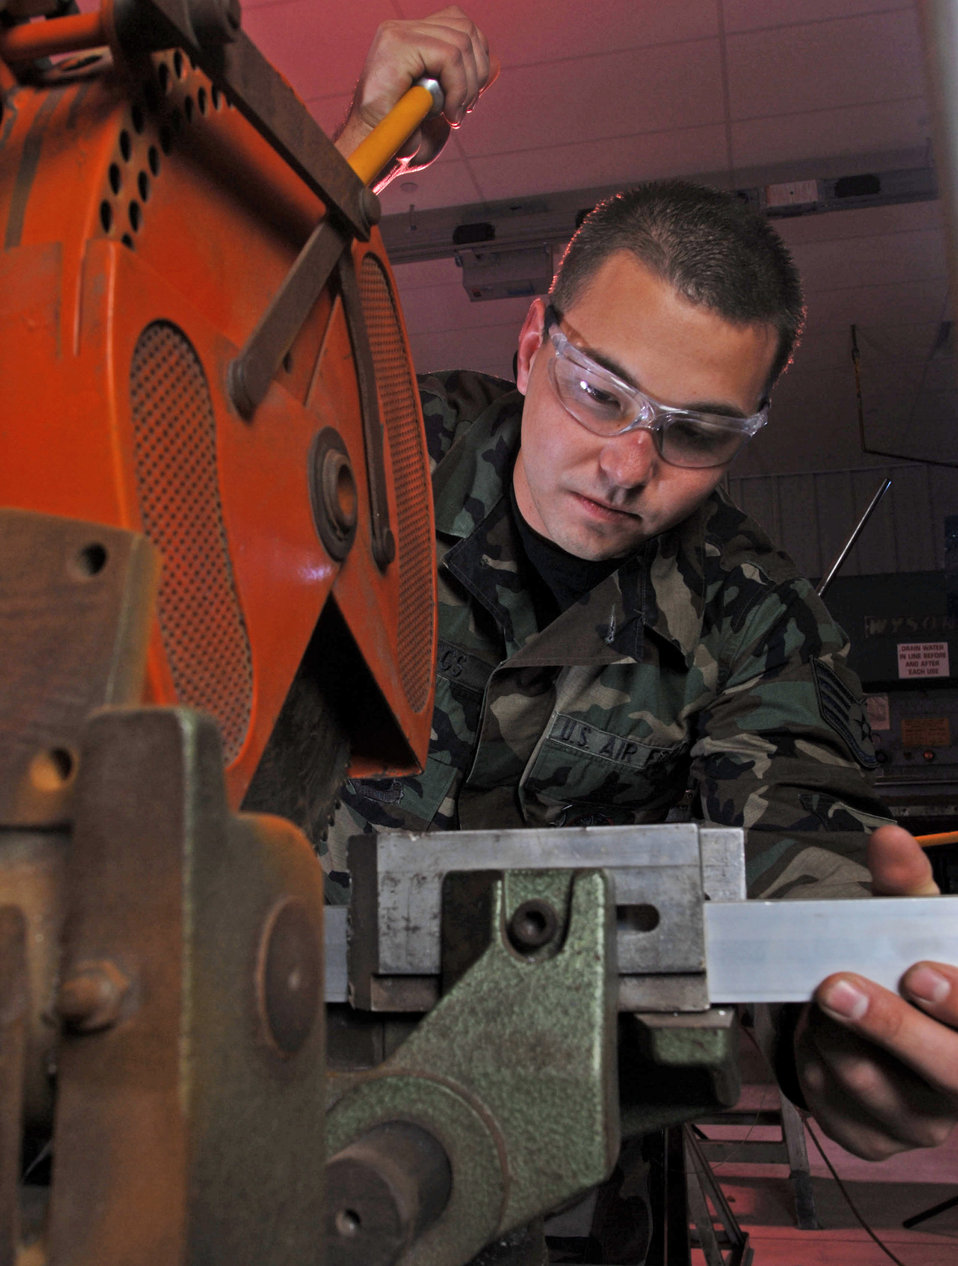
Metal mania

Staff Sgt. Greg Boggs adjusts a chop saw before cutting a piece of extrusion Nov. 28 that will be used for a repair on a KC-135 Stratotanker aircraft at March Air Reserve Base, Calif. In addition to being the home of the Air Force Reserve Command's largest air mobility wing, the base hosts units from the Army, Navy and Marine Corps Reserve, and the Air National Guard. Sergeant Boggs is an aircraft structural maintenance technician from the 452nd Maintenance Squadron.